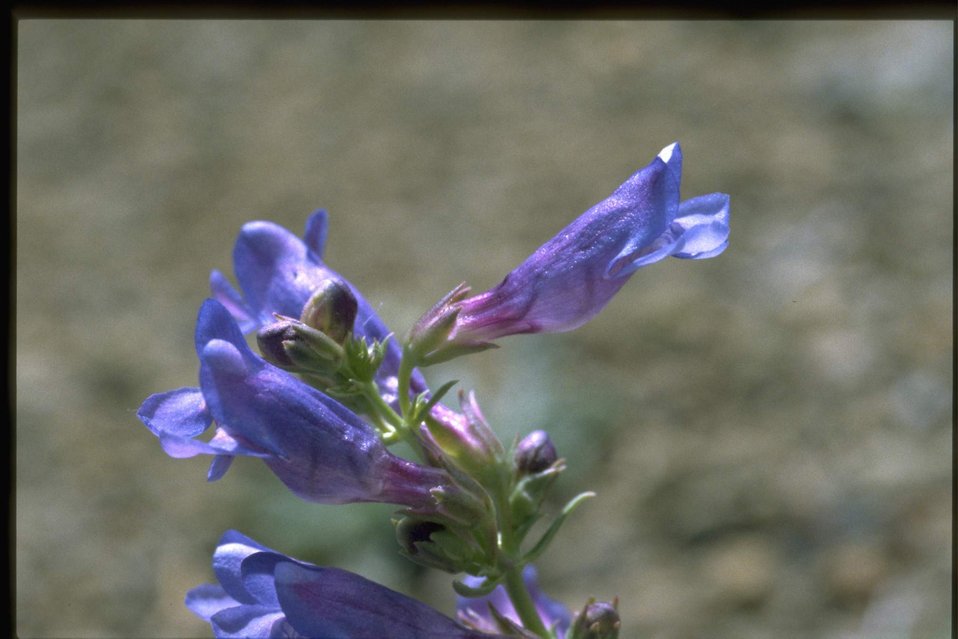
Closeup shot of Penstemon wildflower.